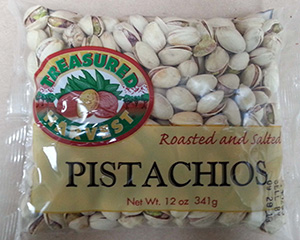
RECALLED – Roasted and Salted Pistachios

July 10, 2013 – Product Recall – Western Mixers Produce & Nuts, Inc. Recalls Pistachios Because of Possible Health Risk.